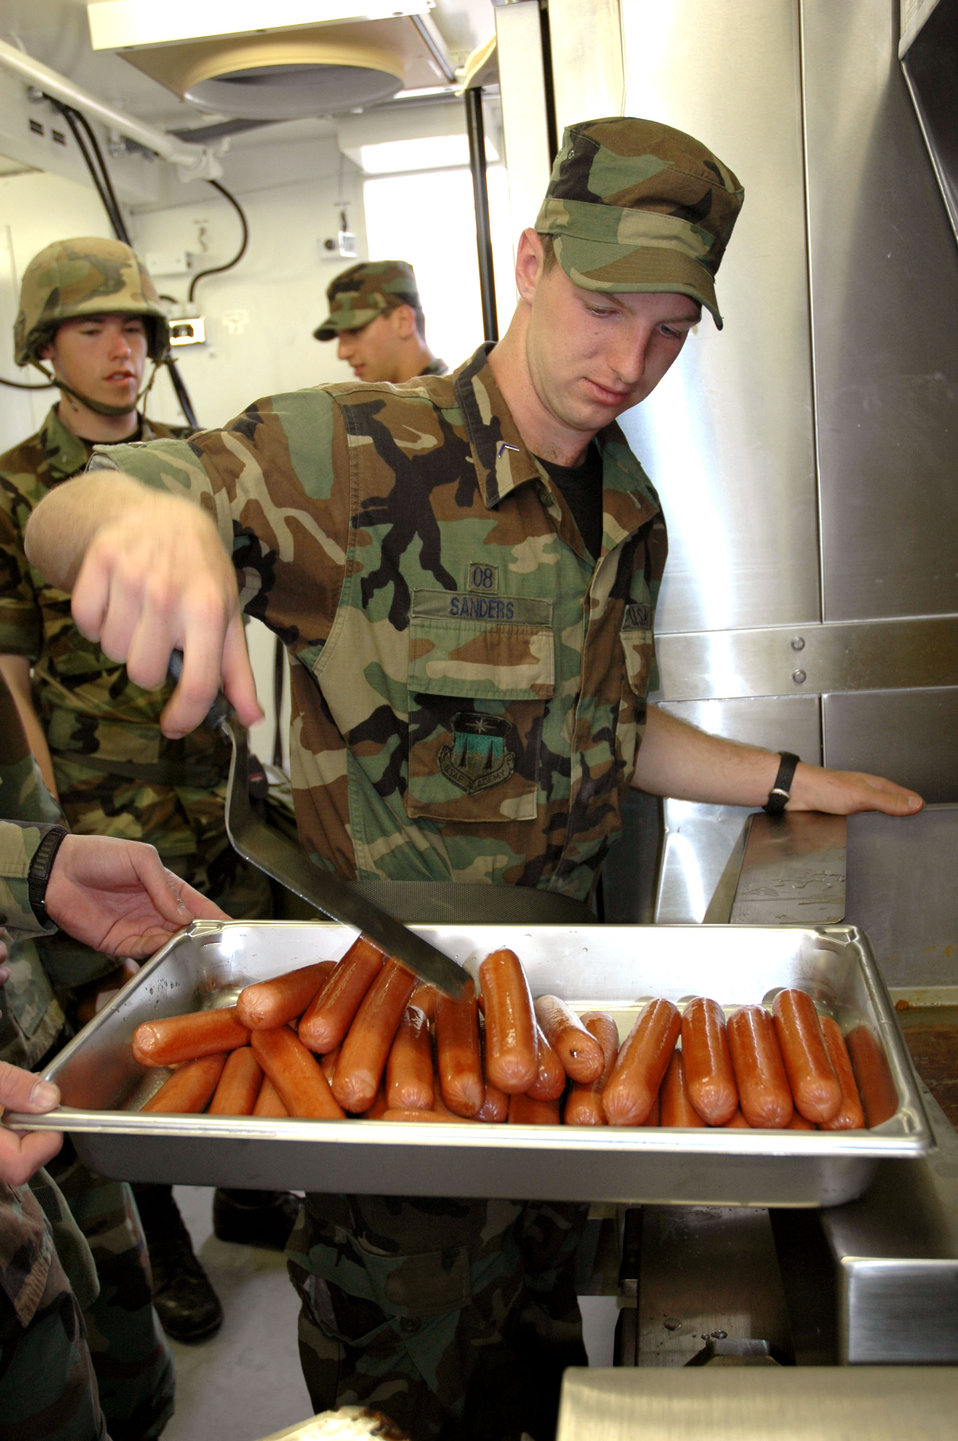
Cadets learn it's a BEAR out there

U.S. AIR FORCE ACADEMY, Colo. -- Cadet 3rd Class Kyle Sanders prepares hot dogs in a contingency deployment kitchen June 10 as the cadets' first hot meal during Global Engagement 2005. The kitchen can be set up in two hours. This was the first of six groups of cadets to go through the training throughout the summer.